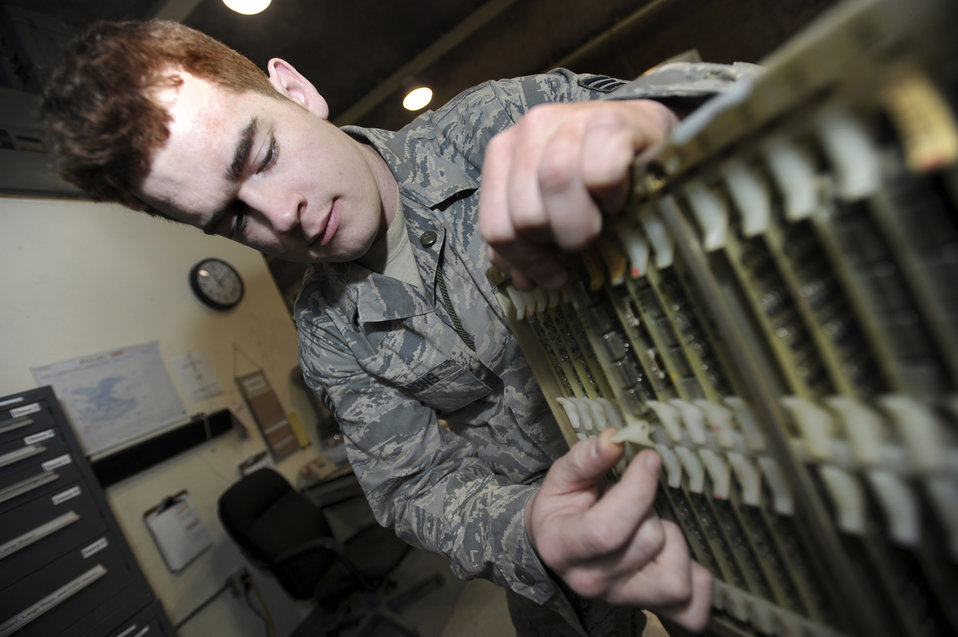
Keeping the Fighters Fighting.

Senior Airman Josh Simmons troubleshoots a circuit card for a radar test station Feb. 19 in an undisclosed location in Southwest Asia. The test station ensures the F-15E Strike Eagle radars are working properly and are mission ready. Airman Simmons is an avionics intermediate section radar team leader for the 379th Expeditionary Maintenance Squadron.